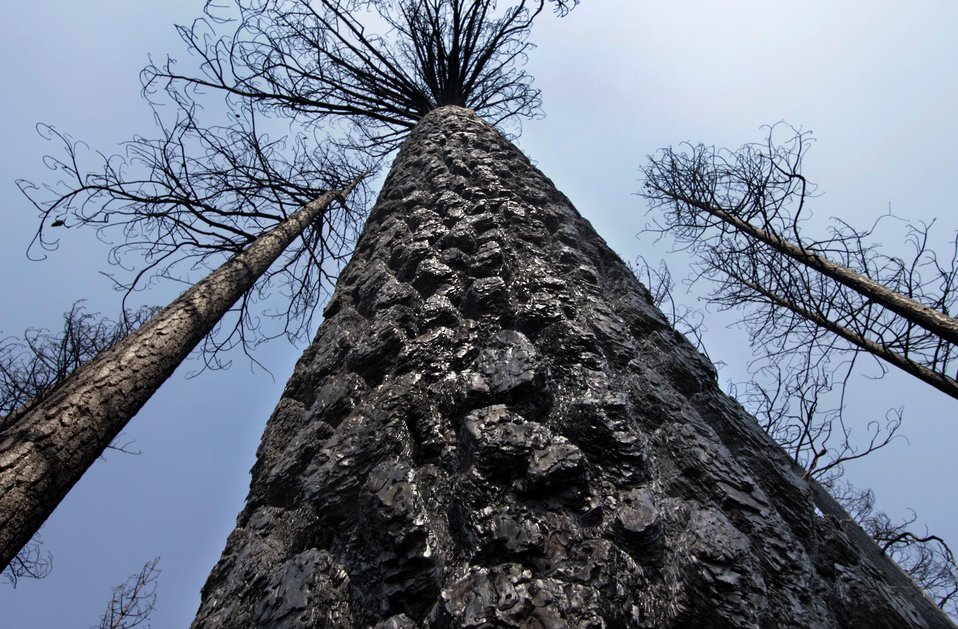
Burnt trees stand in the Stanislaus National Fire after the Rim Fire. The Rim Fire in the Stanislaus National Forest near in California began on Aug. 17, 2013 and is under investigation. The fire has consumed approximately 257,135 acres and is 92% contained.